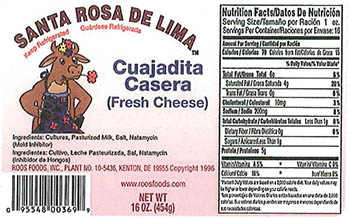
RECALLED – Variety of cheeses

February 23, 2014 – Product Recall – Roos Foods Voluntarily Recalls Variety of Cheeses (listed below) Due to Possible Health Risk.